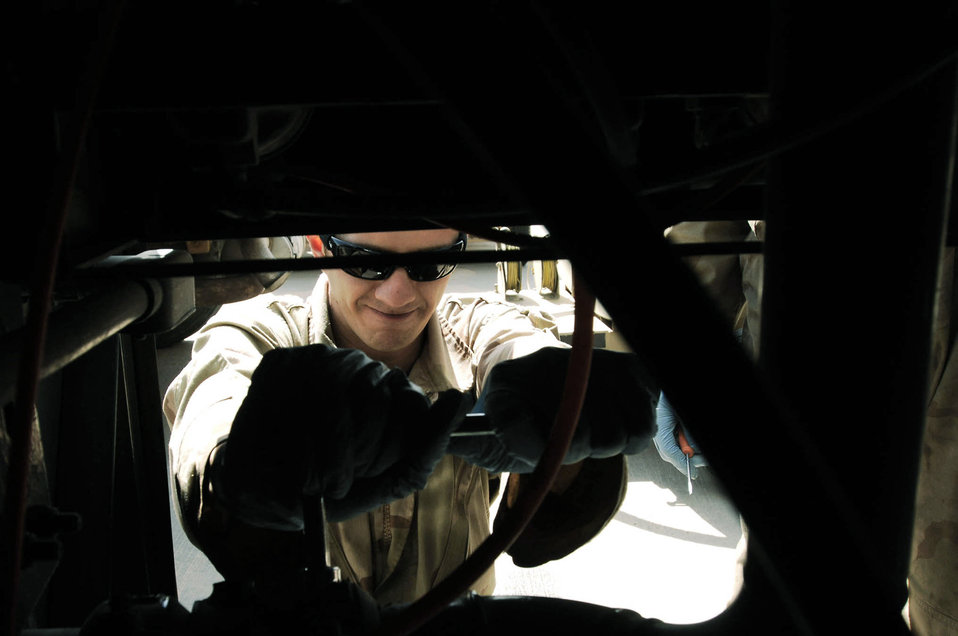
Fueled to fight

Senior Airman Brandon Huelsman wrenches loose a bolt in the over-wing valve of an R-11 fuel truck for repair Feb. 26 in Southwest Asia. The fuels management flight is responsible for inventorying the fuel daily, and the transfer and issue of fuel to both vehicle operators and aircrews in support of operations Enduring Freedom and Iraqi Freedom. Airman Huelsman is a refueling maintenance technician from the 386th Expeditionary Logistics Readiness Squadron.